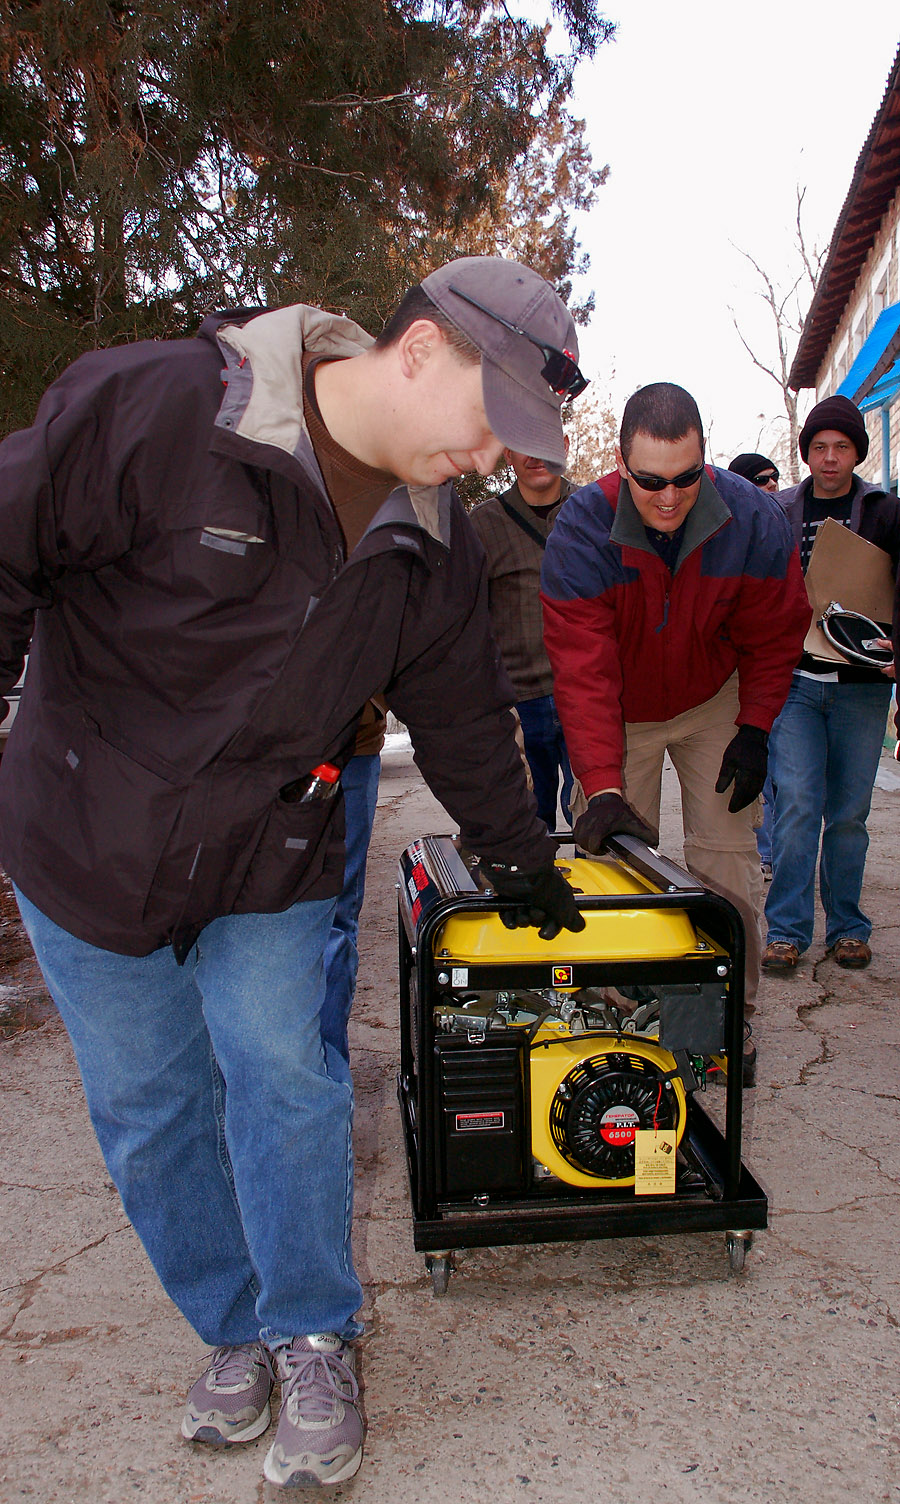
Kyrgyz children thank Manas volunteers

Maj. Shane Noyes and Master Sgt. John Pahukoa deliver a new generator Feb. 20 to the Vasilievka Kindergarten School in Kyrgyzstan. Along with the new generator, volunteer Airmen recently donated a new refrigerator and stove to the school as well through donations raised by the Manas Service Organization. Major Noyes is chief of the 376th Air Expeditionary Wing Plans and Programs Office deployed from Scott Air Force Base, Ill. Sergeant Pahukoa is assigned to the 376th Expeditionary Civil Engineer Squadron deployed from Hurlburt Field, Fla.